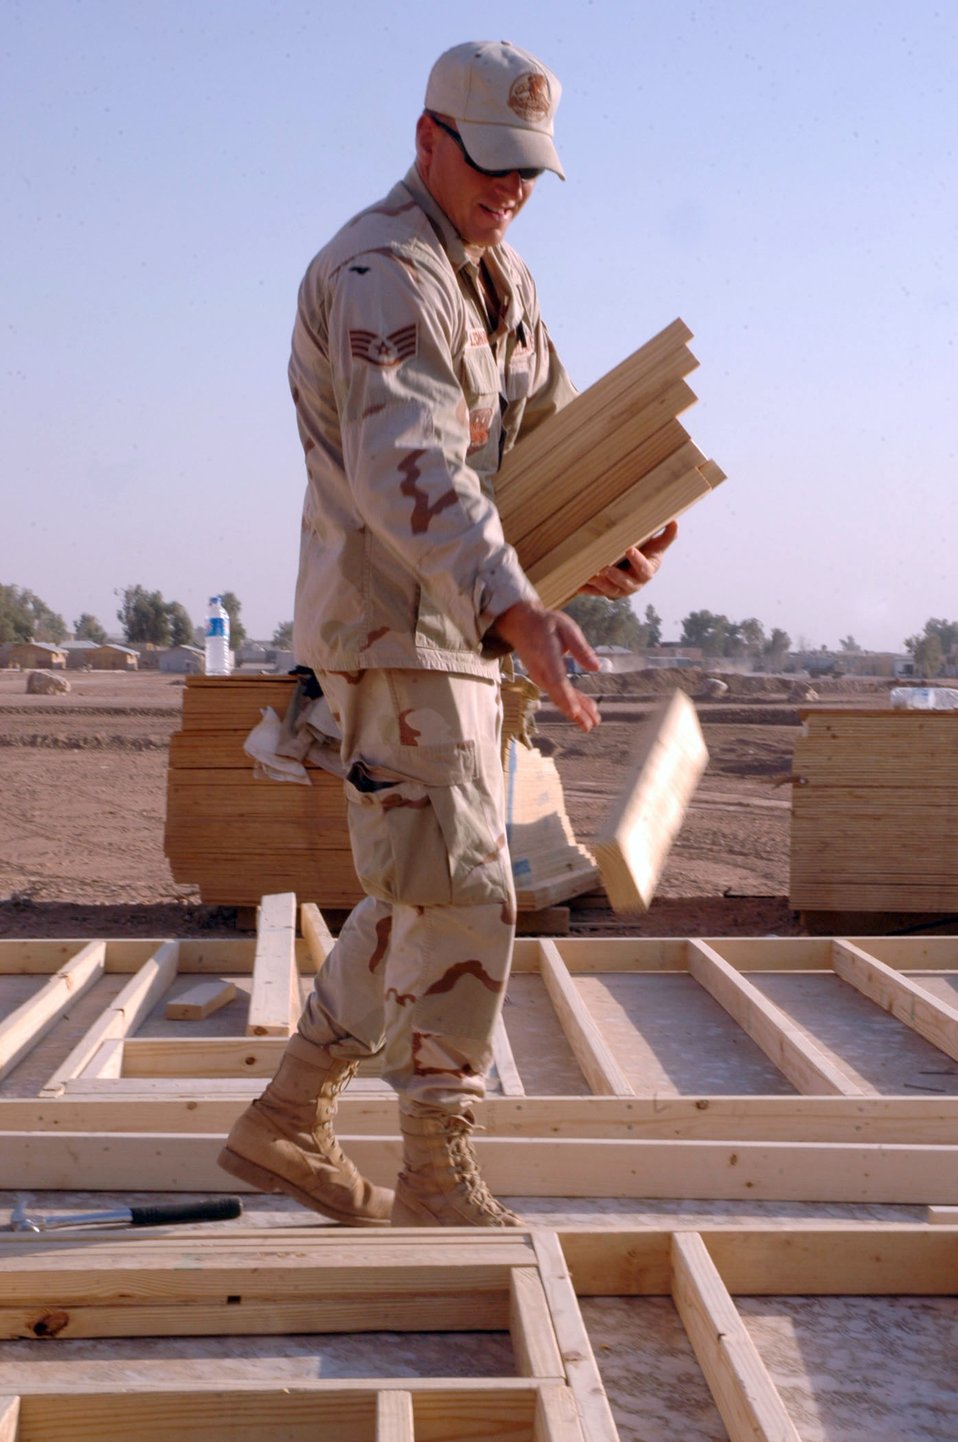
Airmen build Army post

FORWARD OPERATION BASE QAYYARAH WEST, Iraq (AFPN) -- Staff Sgt. Christopher Leonard drops in stabilizing blocks on a new construction project. Sergeant Leonard is one of many Airmen building a morale, welfare and recreation building to be used by both the Airmen and Soldiers here. Sergeant Leonard is the structural craft team leader with the 557th Expeditionary Red Horse Squadron.